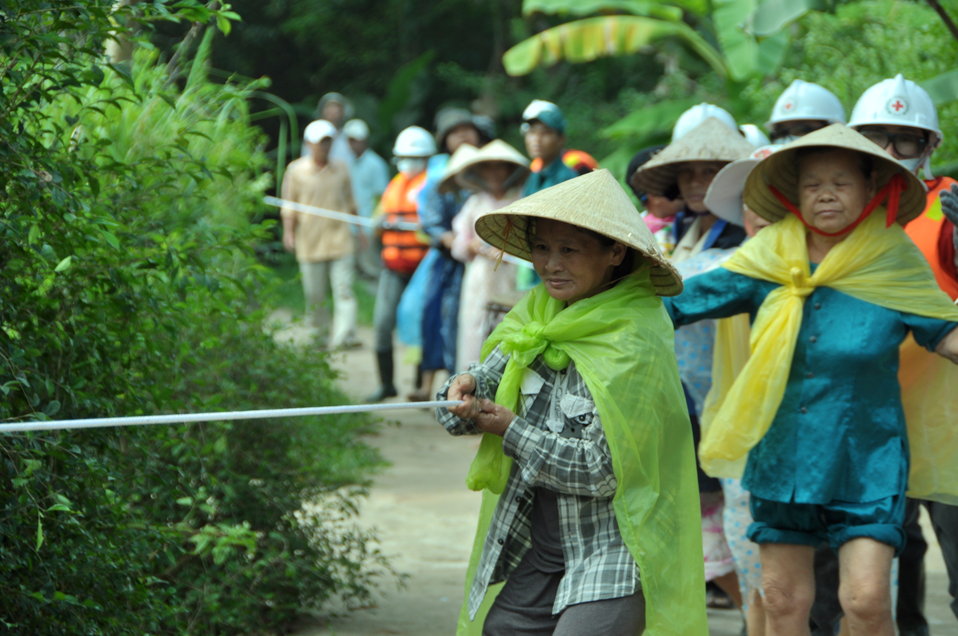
USAID, Red Cross Support Disaster Response Drill in Duy Hoa Commune, Quang Nam Province

Duy Hoa Commune, Quang Nam Province
December 5, 2012